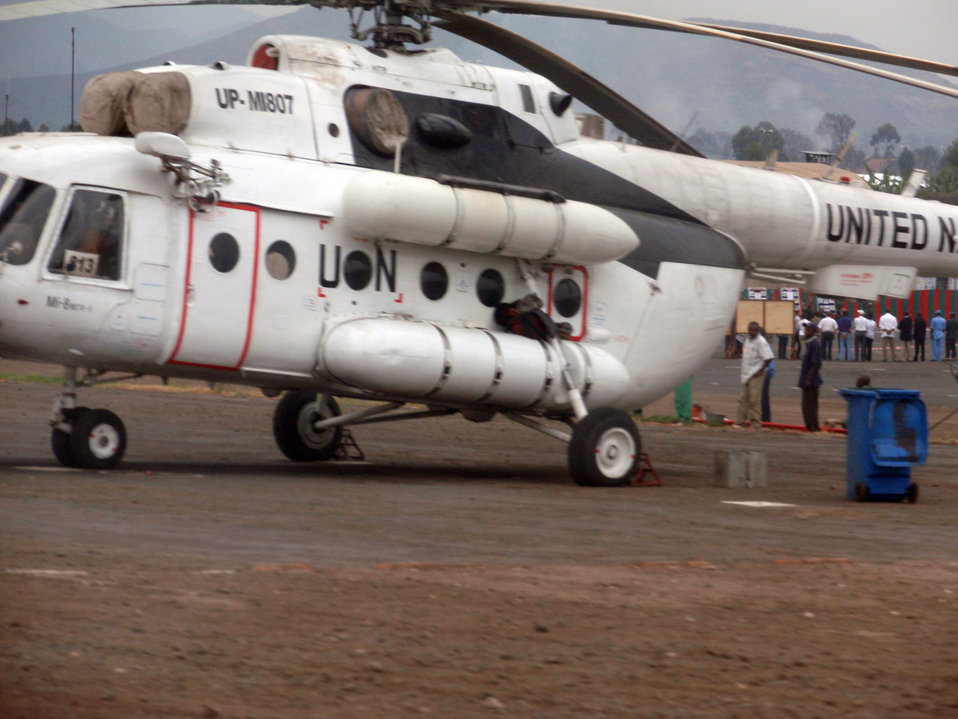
Behind the Scenes: Secretary Clinton Visits MONUC in Goma

The scene during U.S. Secretary of State Hillary Rodham Clinton's tour the United Nations Mission in the Democratic Republic of Congo (MONUC) air support operations base in Goma, Democratic Republic of Congo August 11, 2009.